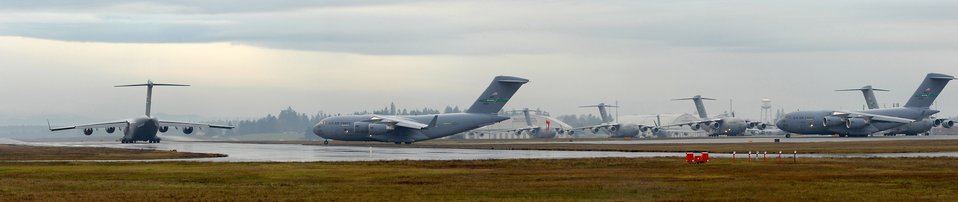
10 Globemaster IIIs fly in formation over Washington state

Several C-17 Globemaster III's wait on the flightline prior to launching as part of a 10-ship formation training exercise Dec. 20 at McChord Air Force Base, Wash. Key players included the 62nd Airlift Wing and 446th Maintenance Group, which will generate, launch and recover the aircraft.